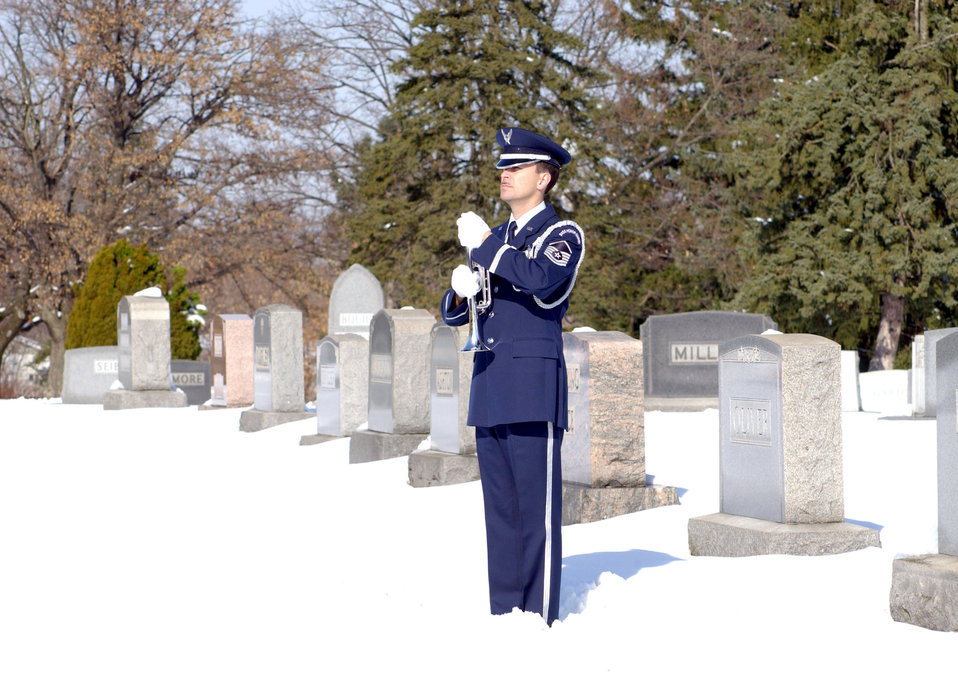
On Tap

MARTINSBURG, West Virginia -- Master Sgt. Ronald Glazer stands in a snowy cemetery waiting to play